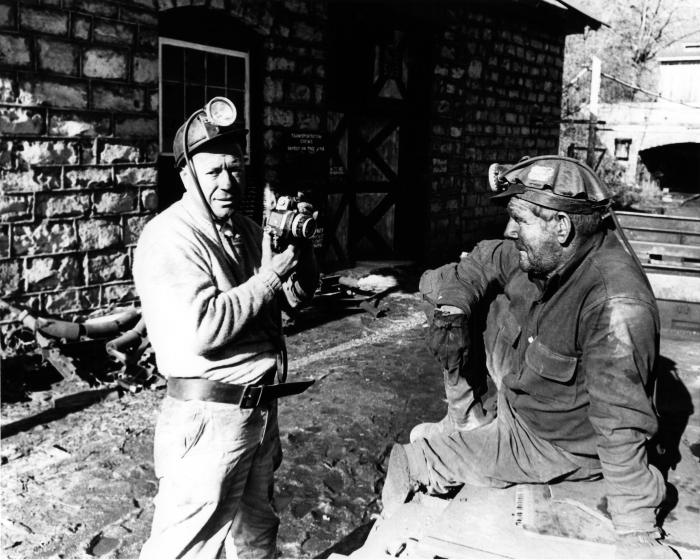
Still wearing their head-lamps outside the confines of the coal mine, this historic image, provided by the Center for Disease Control's (CDC), National Institute for Occupational Safety and Health (NIOSH), depicted a photographer using a hand-held 35mm SLR camera who was photographing a coal miner whose face was covered in coal soot. From the appearance of the coal dust on the miner's face, it looks as if he had not been wearing any protective breathing mask. Due to the inescapable presence of airborne coal dust in the small confines of a mine, miners are predisposed to the long-term negative health effects of this profession such as 'black lung disease', or 'coal-workers' pneumoconiosis' (CWP). Today, the Federal government's stringent regulations on the level of coal dust permissible in the air of a coal mine, and the requisite use of filtered breathing devices, has dramatically lowered the number of cases of black lung disease.